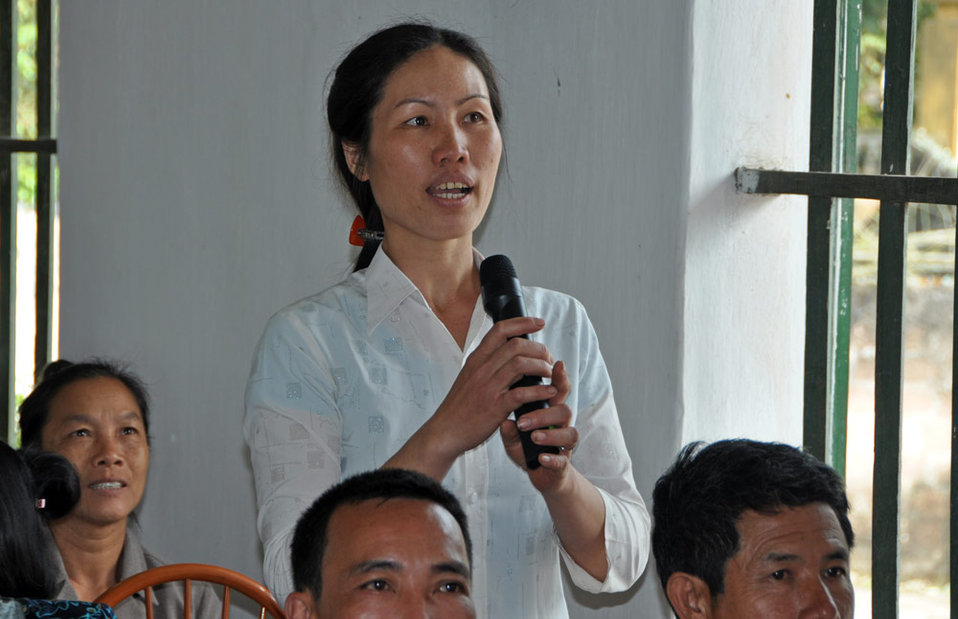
Residents in Vietnam's Tien Ngoai Commune, Duy Tien District, Ha Nam Province, discuss ways to prevent and control avian and pandemic influenza.